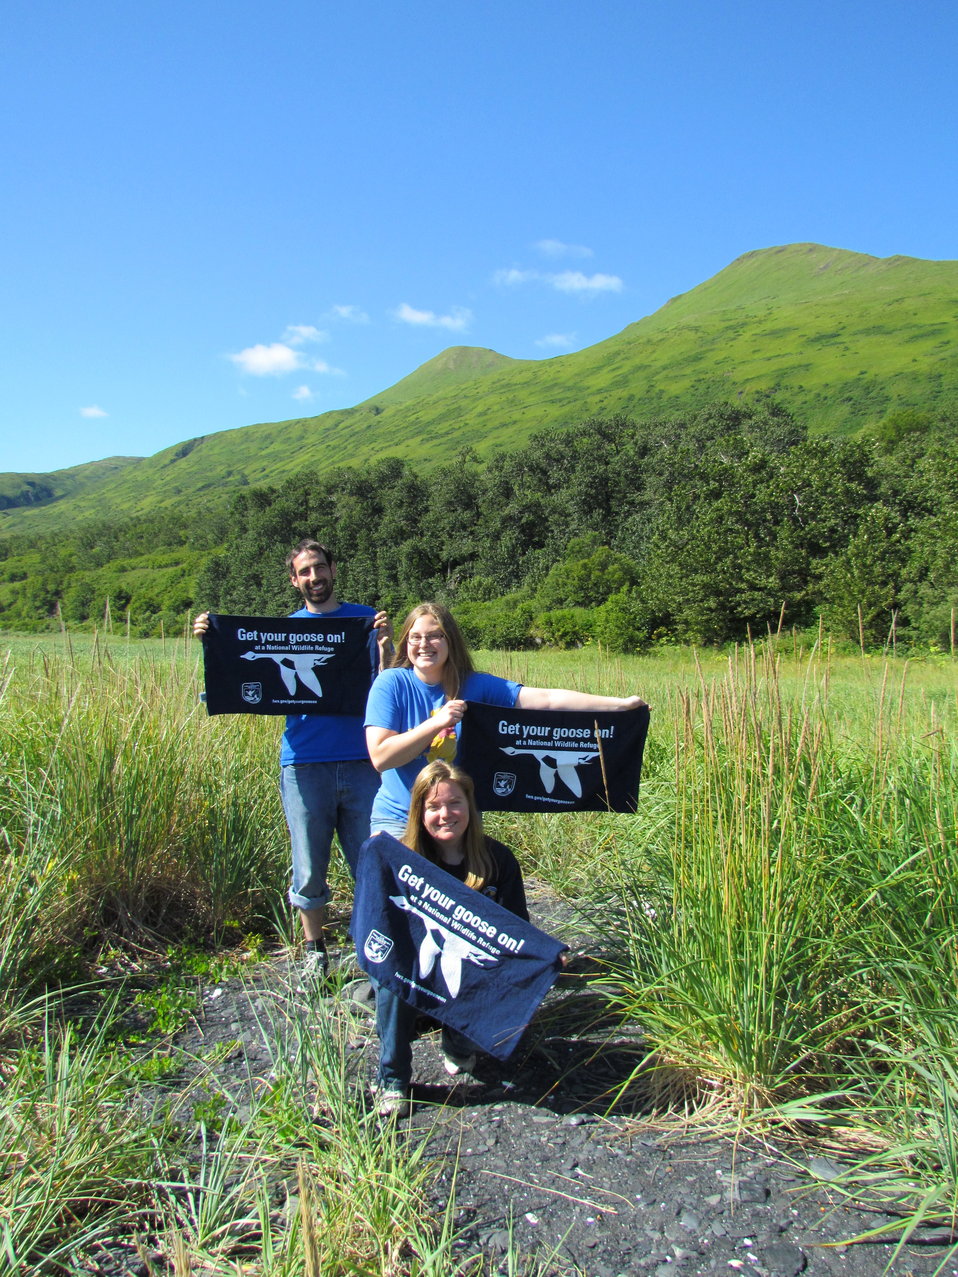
Get Your Goose On! - Alaska Style

Student Conservation Association interns, Rory Psotka, Ali Sutton and Kristen Riesberg

Credit: Shelly Lawson / USFWS

The Kodiak National Wildlife Refuge is a United States National Wildlife Refuge in the Kodiak Archipelago in southwestern Alaska, United States.

The Kodiak National Wildlife Refuge includes the southwestern two-thirds of Kodiak Island, Uganik Island, the Red Peaks area of Afognak Island and all of Ban Island in the archipelago. It encompasses 1,990,418 acres (8,054.94 km2).[2] The refuge is administered from offices in Kodiak.

The refuge contains seven major rivers and about 100 streams. It is a spawning ground for all six species of Pacific Ocean salmon, trout and several other fish species, as well as a nesting ground for 250 species of bird, many of which feed on salmon. The refuge has only six native species of mammals: Kodiak brown bear, red fox, river otter, ermine, little brown bat and tundra vole. The non-native mammals Sitka deer, mountain goat, Roosevelt elk, snowshoe hare and beaver were introduced to the archipelago between the 1920s and 1950s and are now hunted and trapped.

The climate of the refuge is that of southern Alaska, mild and rainy. Many areas in the refuge are densely forested with Sitka Spruce at lower elevations. There are grasslands in drier areas and at higher elevations. The refuge contains several small glaciers.